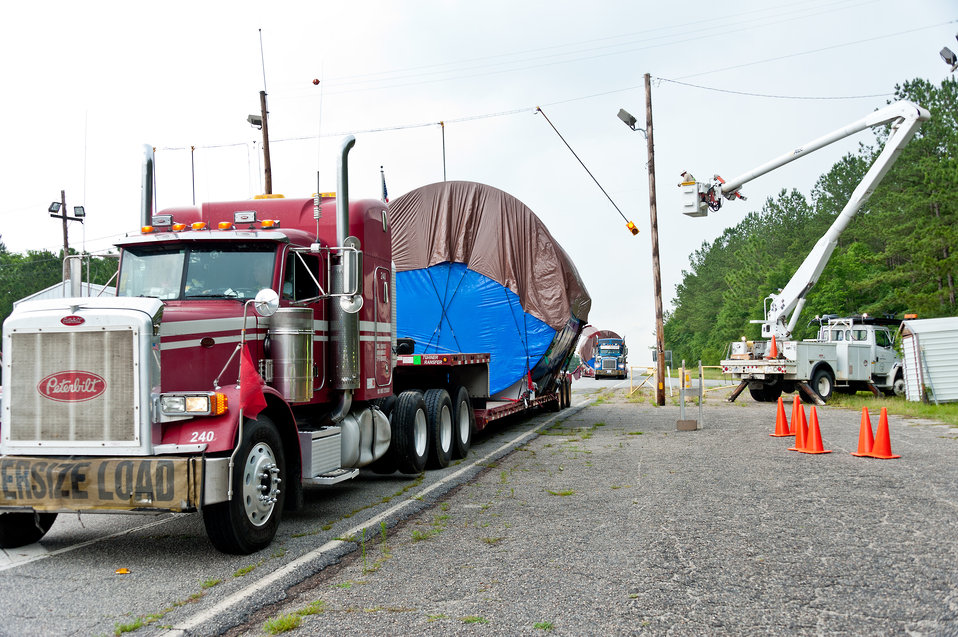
SRS Processing Tanks

The first 10 large nuclear material processing tanks arrives at the Savannah River Site (SRS) in mid-May 2012 for installation in the site’s Salt Waste Processing Facility, signifying a key milestone in the construction of this major cleanup facility designed to treat 33 million gallons of salt waste currently stored in underground tanks at SRS.